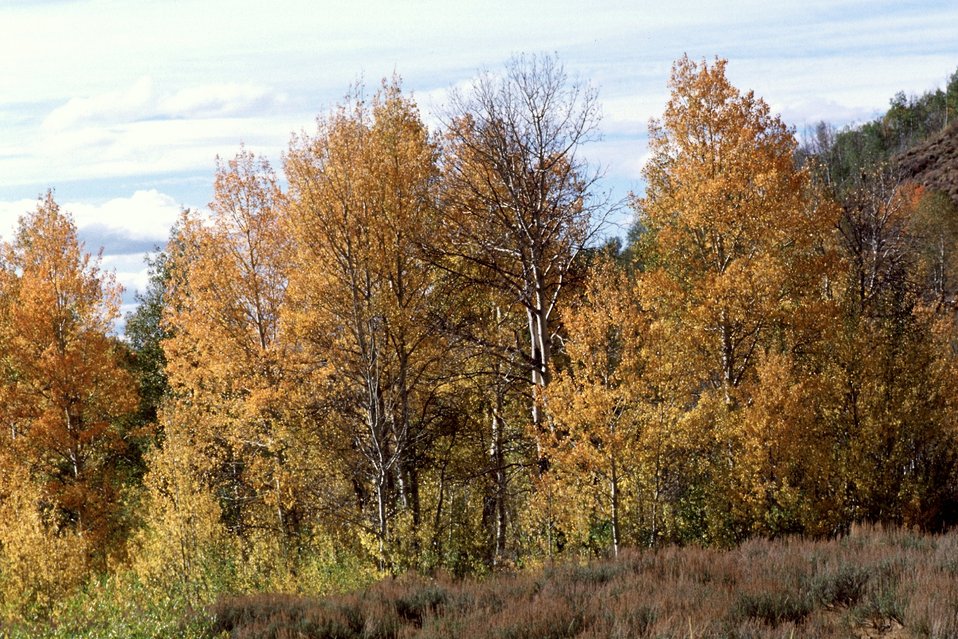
Aspens at Fish Creek, Steen's Mountain.